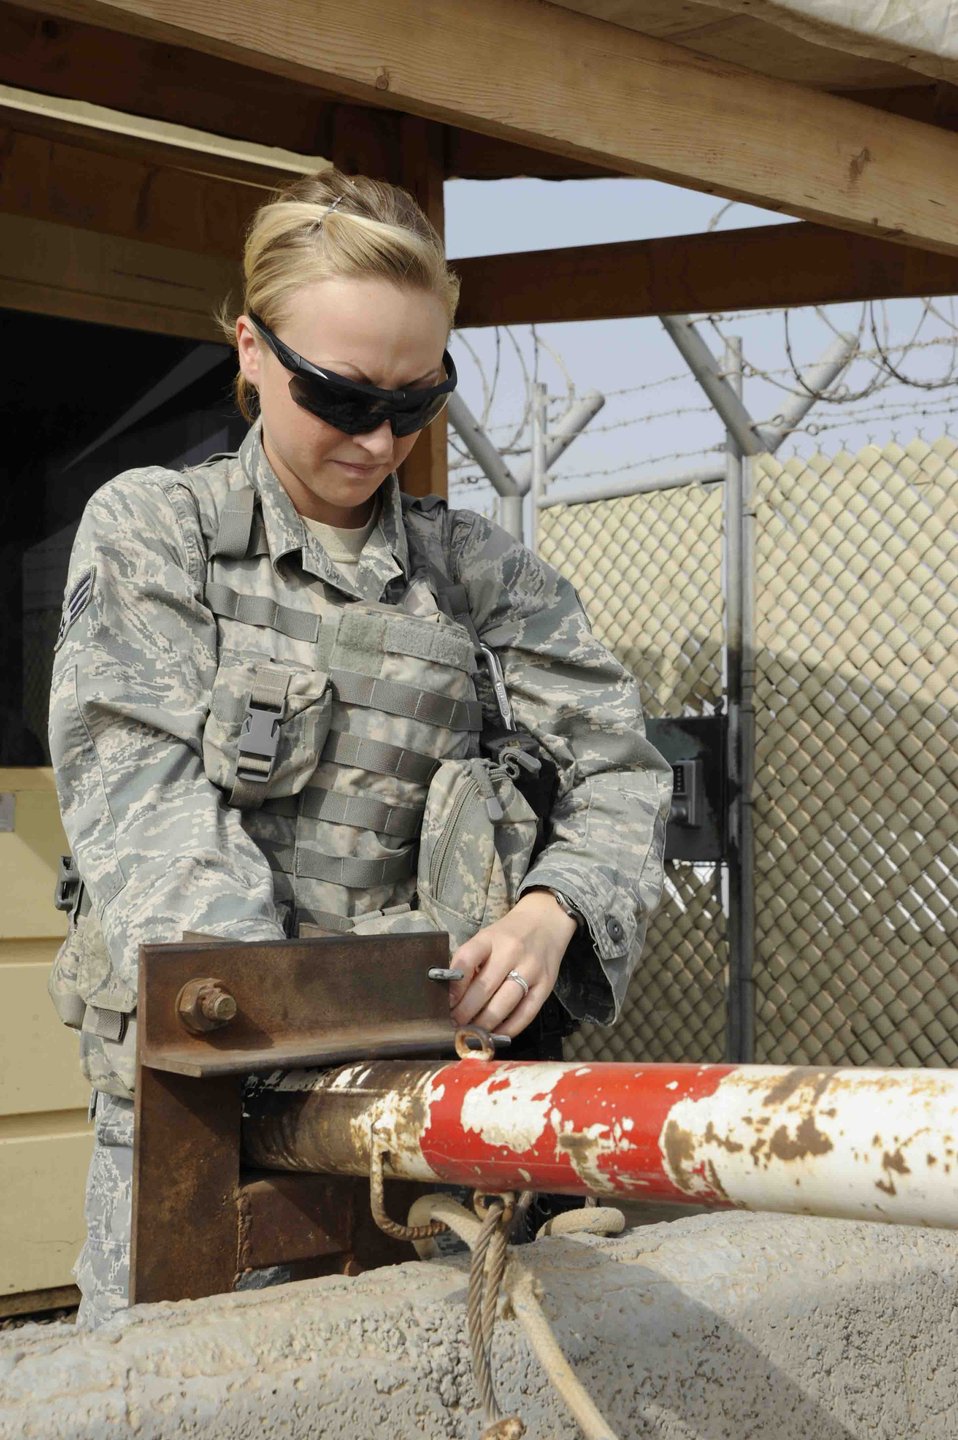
JTF Horn of Africa

Security Forces member Senior Airman Chelsea Snedden, 726th Expeditionary Air Base Squadron, locks down a vehicle gate on Camp Lemonnier July 17, 2012. Security personnel from different branches integrated July 1 to enhance camp security and help support the mission in the Horn of Africa.